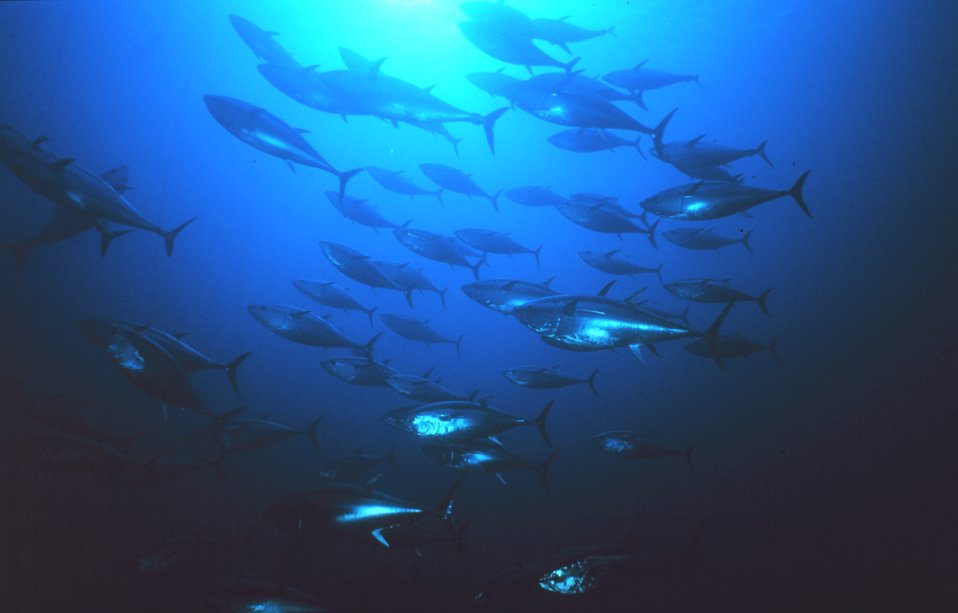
School of tuna

Photo credit: United Nations Food and Agriculture Organization/ Danilo Cedrone

In marine systems, large scale changes to biogeochemical processes, ocean currents, and the increased acidification of ocean waters are expected to have profound impacts on marine ecosystems, including fisheries and tourism